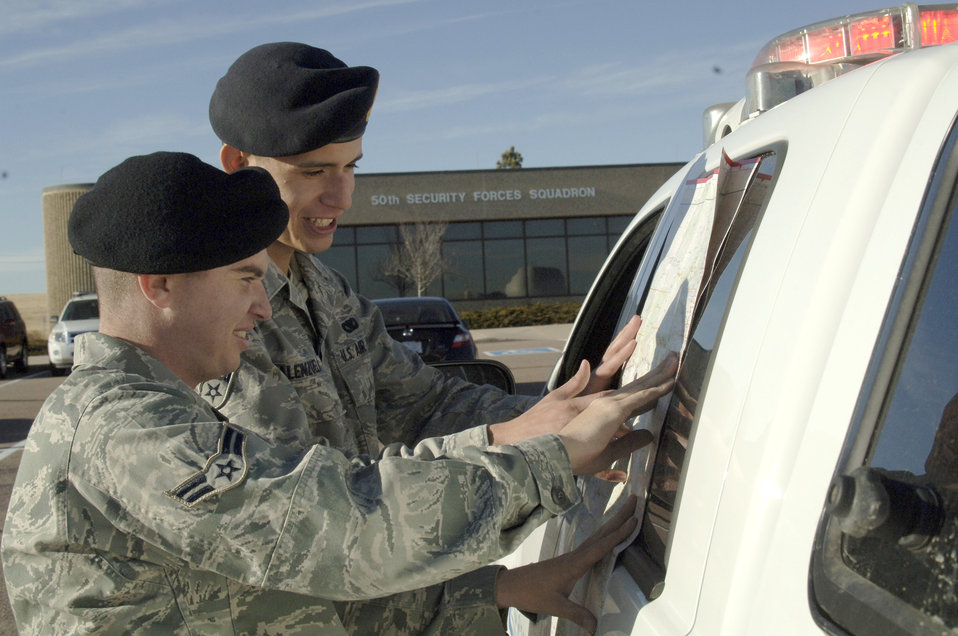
Schriever Airmen SABC

Airman 1st Class Tyler Chason and Airman Emmanuel Valenzuela were at the right place at the right time Nov. 15, 2010, in Colorado Springs, Colo. After dropping off a friend at a local apartment complex, they encountered a gunshot victim whom they aided until emergency medical personnel arrived on scene.